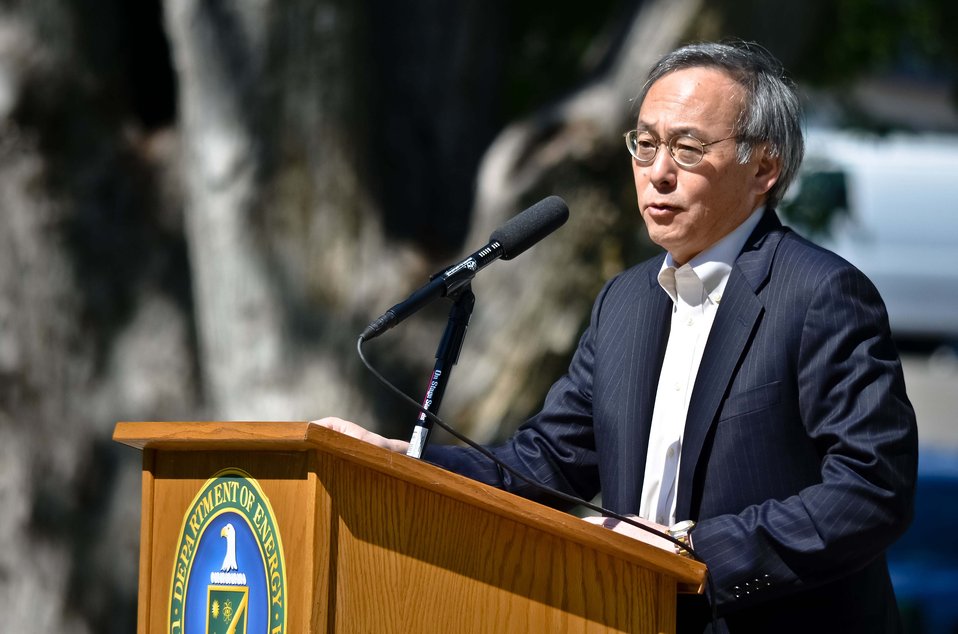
SECRETARY CHU HANFORD ALL EMPLOYEE MEETING 2012

DOE Secretary Chu speaks to hundreds of Hanford Site employees during a meeting on June 15, 2012.